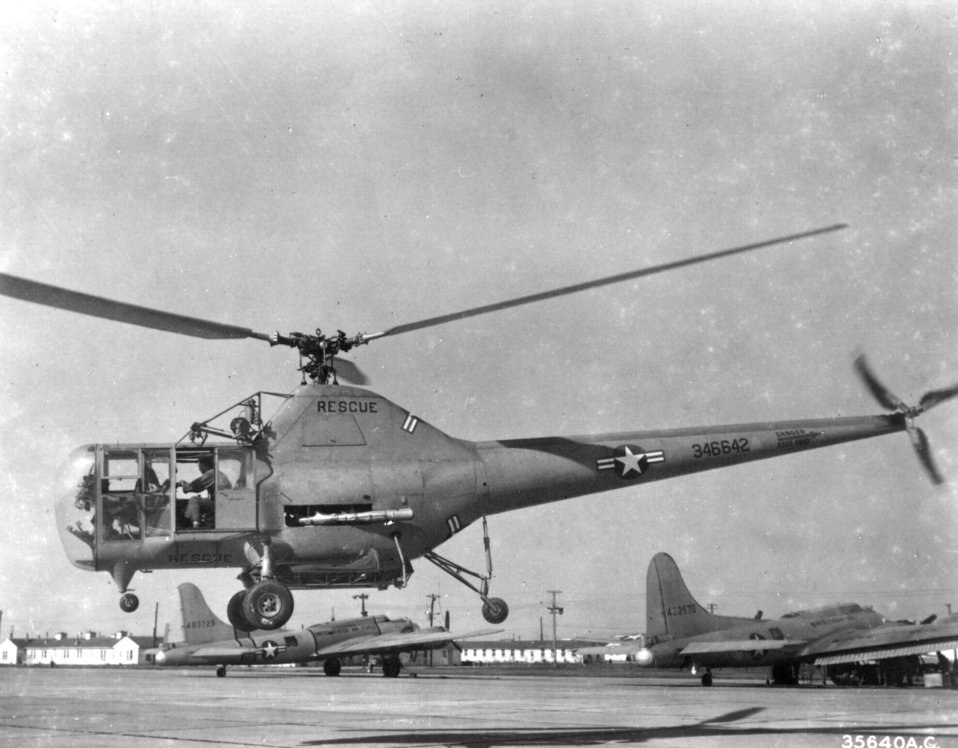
The H-5 Dragon Fly

1940's -- The H-5